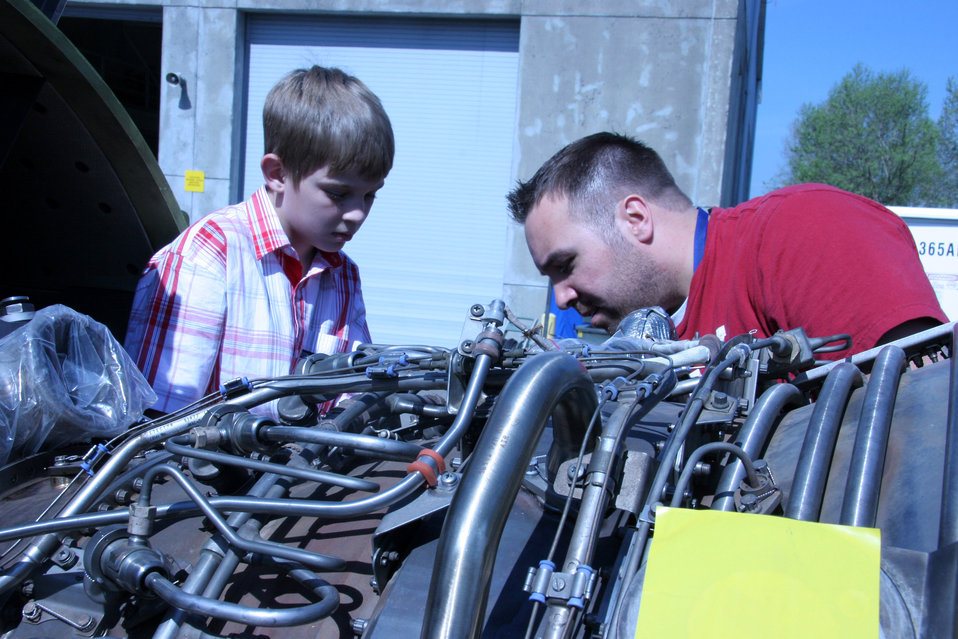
Take Our Daughters and Sons to Work Day

Staff Sgt. Carl Hojnacki, shows Cheis Hanzelic the moving parts of a KC-135 Stratotanker engine during Take Our Daughters and Sons to Work Day at the 939th Air Refueling Wing in Portland, Ore., on Thursday, April 27, 2006. Sergeant Hojnacki is an engine mechanic with the 939th Maintenance Squadron.